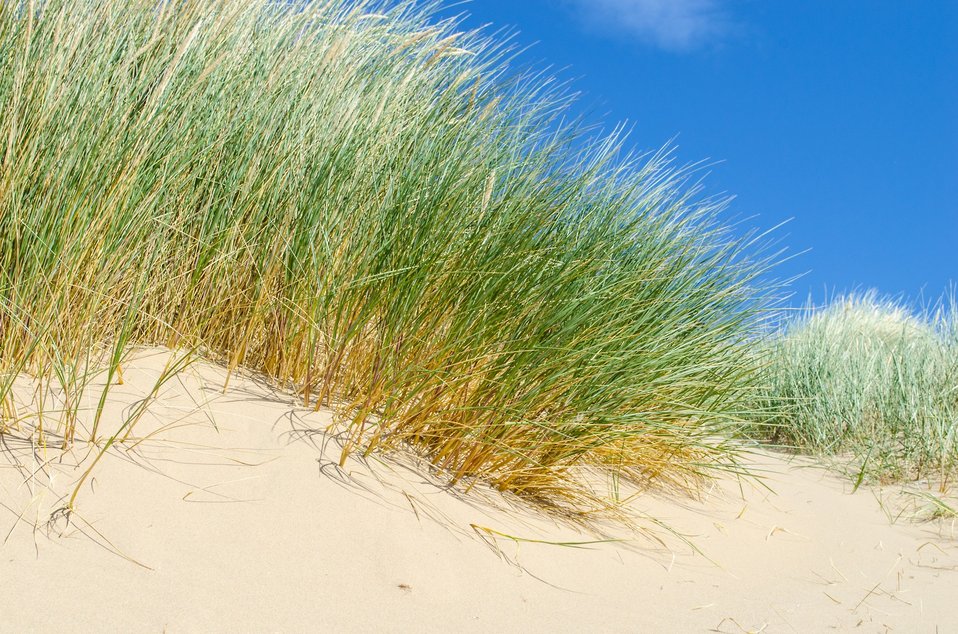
Plant on the beach.